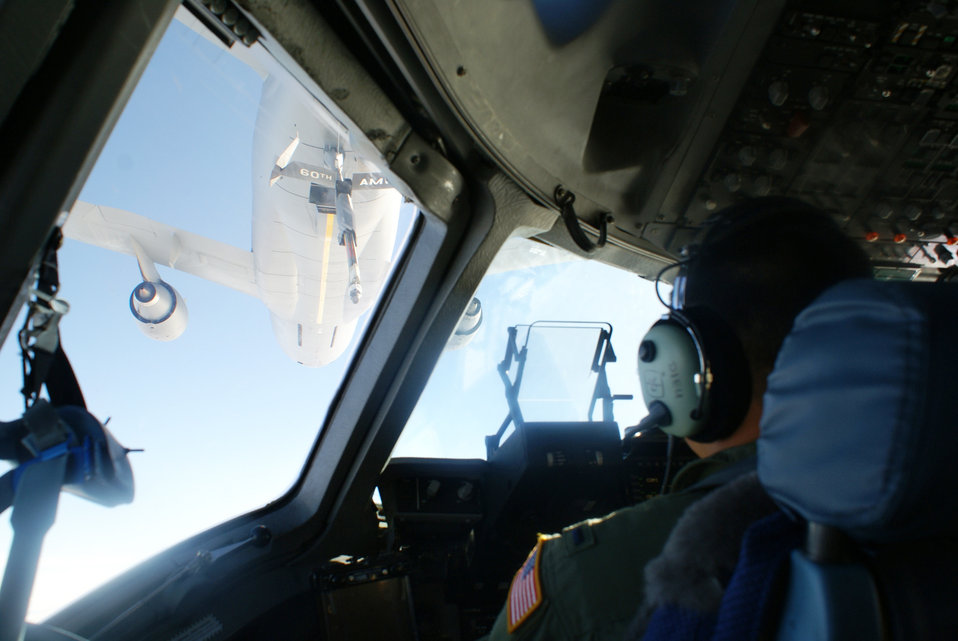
Gas and go

1st Lt. Andre Dieu positions a C-17 Globemaster III for refueling by a KC-10 Stratotanker over the Pacific Ocean Oct. 1, 2009. The C-17 was en route from McChord Air Force Base, Wash., to Pago Pago, American Samoa, supporting humanitarian relief efforts. A team of Federal Emergency Management Agency officials and 17,000 pounds of communications equipment were on their way. Lieutenant Dieu is assigned to the 7th Airlift Squadron at McChord AFB.